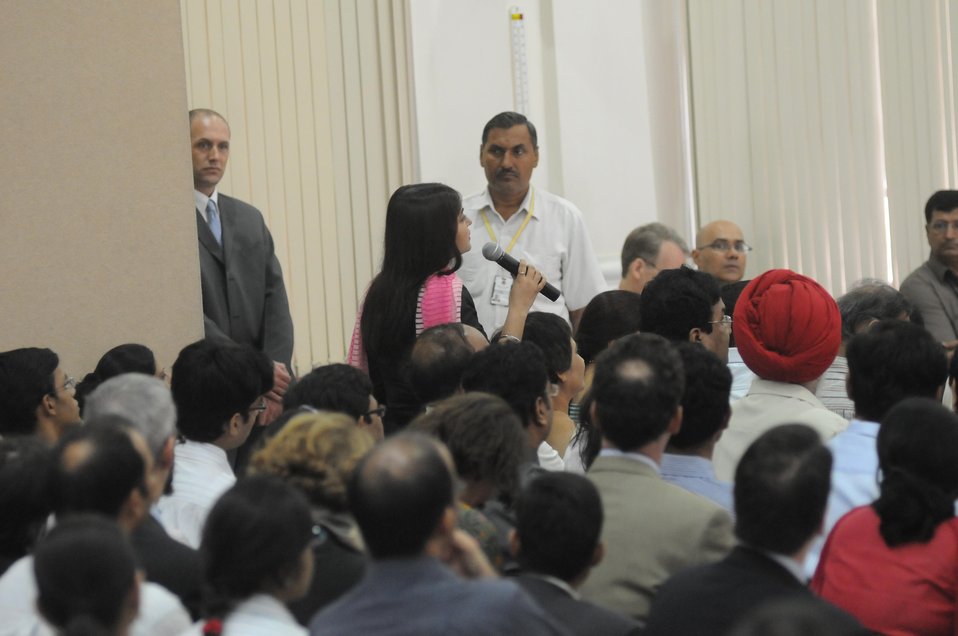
Secretary Clinton Speaks at University of Delhi

A member of the audience asks U.S. Secretary of State Hillary Rodham Clinton a question after the Secretary's speech at the University of Delhi in New Dehli, India July 19, 2009.